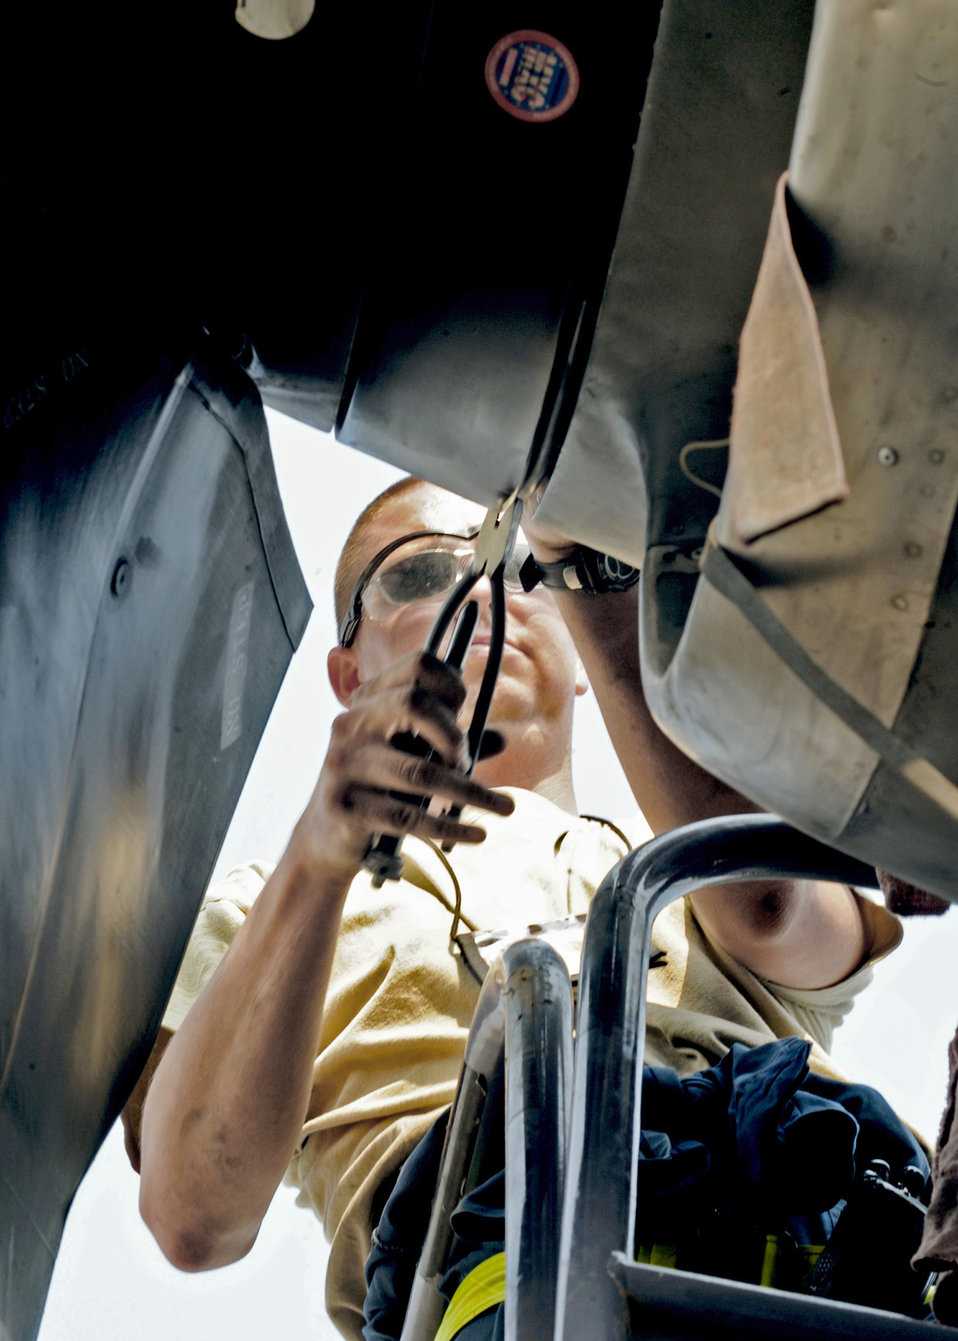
C-130E electronic attack maintenance

Tech. Sgt. Christopher Chadwell secures the filler cap to a pressurized sump after a hydraulic fluid level check on a C-130E Hercules Aug. 11, 2010, at an air base in Southwest Asia. Sergeant Chadwell is a propulsion craftsman with the 386th Expeditionary Aircraft Maintenance Squadron.